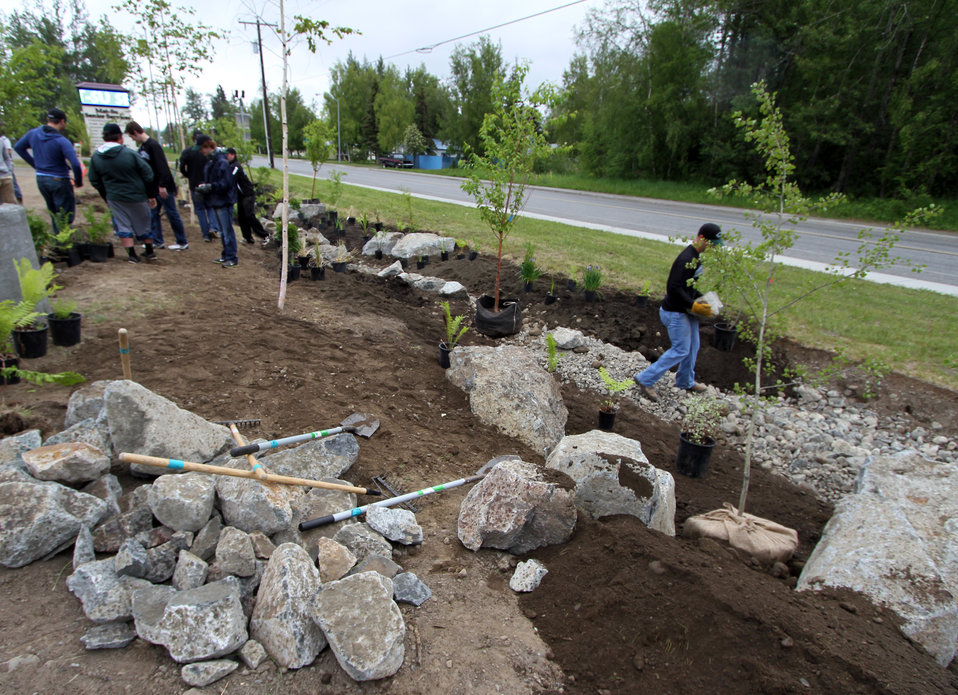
Rain Garden Installation

A rain garden installation at the Palmer Senior Center in Southcentral Alaska. Rain gardens are vegetated areas built specifically to manage stormwater runoff from driveways, sidewalks, roofs, and other paved surfaces. Here, a youth baseball team helps with some heavy lifting. USFWS/Katrina Mueller